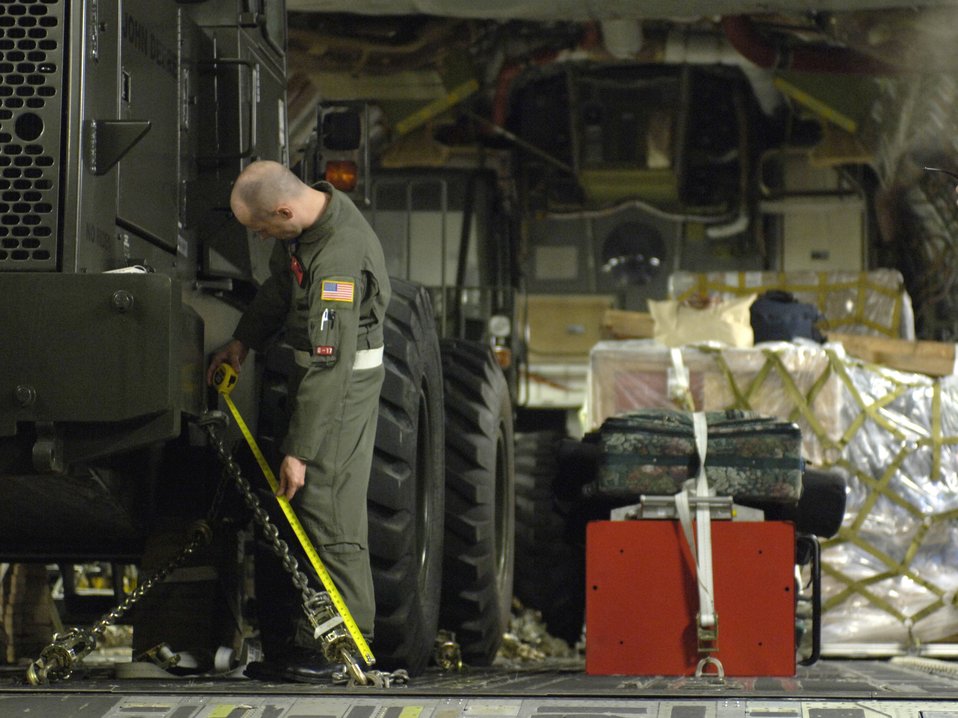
Hands-on training

ANDERSEN AIR FORCE BASE, Guam (AFPN) -- Staff Sgt. Ryan Page measures support chains that strap down a forklift on a C-17 Globemaster III Feb. 22. The composite C-17 squadron of active duty and Hawaii Air National Guard flew their first contingency response mission to deliver relief supplies to the Philippines. Sergeant Page is with the 535th Airlift Squadron.